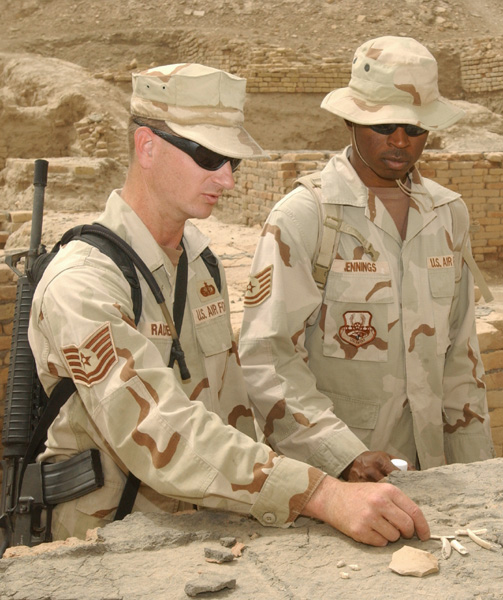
Deployed Airmen give tours to Iraqi historical landmark

ALI BASE, Iraq -- Tech. Sgt. Mike Radke (left) shows Tech. Sgt. Barrington Jennings how to tell the difference in the character signatures among coral, sea shells, pottery and human bones. Sergeant Radke is assigned to the 407th Expeditionary Services Squadron and is one of two Airmen within the squadron who gives tours of a 4,000-year-old monument. Sergeant Jennings is assigned to the 407th Air Expeditionary Group. They are deployed from McConnell Air Force Base, Kan.